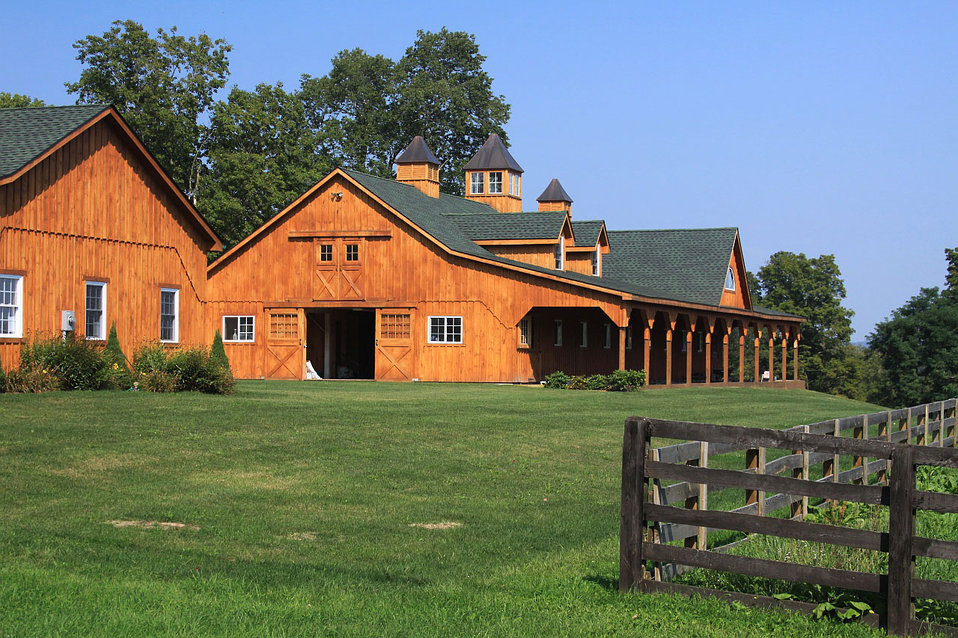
Farm

New buildings on farm.